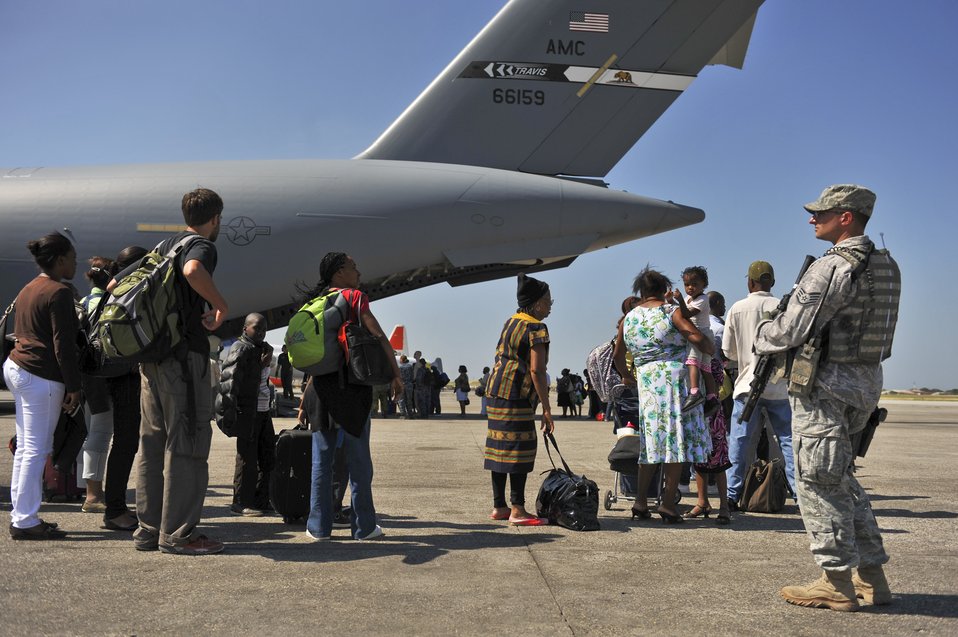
Evacuation

A group of approximately 200 Haitians wait to board a C-17 Globemaster III at Toussaint L'Ouverture International Airport in Port-au-Prince, Haiti, Jan. 23, 2010. Aircraft from all over the world are flying into the airport to drop off humanitarian aid and transport people out of the country in the aftermath of the devastating earthquake Jan. 12.